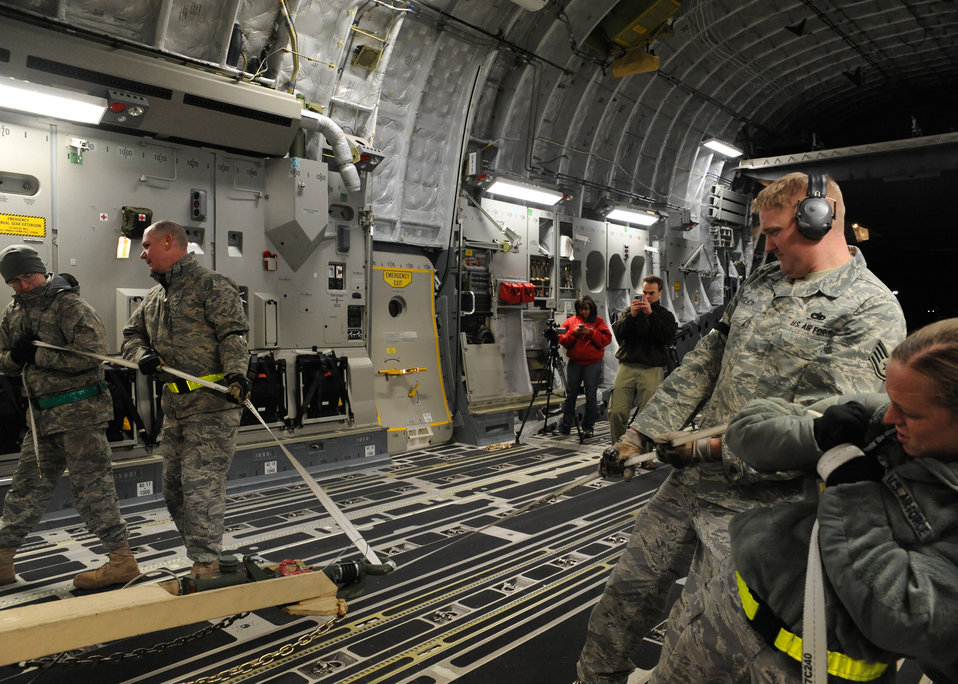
Haiti Humanitarian Effort

Members of the 305th Aerial Port Squadron load equipment onto C-17 at Joint Base McGuire-Dix-Lakehurst, New Jersey, Jan. 15, 2010. Air Mobility Command is responding with all necessary forces and equipment to aide the humanitarian efforts in Haiti.